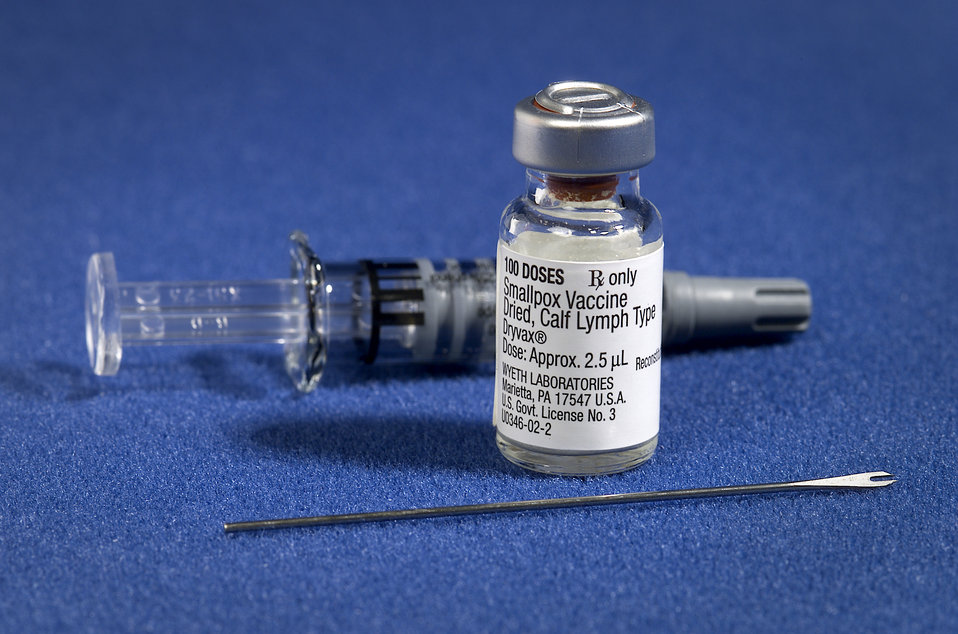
Components of a smallpox vaccination kit including the diluent, a vial of Dryvax� smallpox vaccine, and a bifurcated needle.